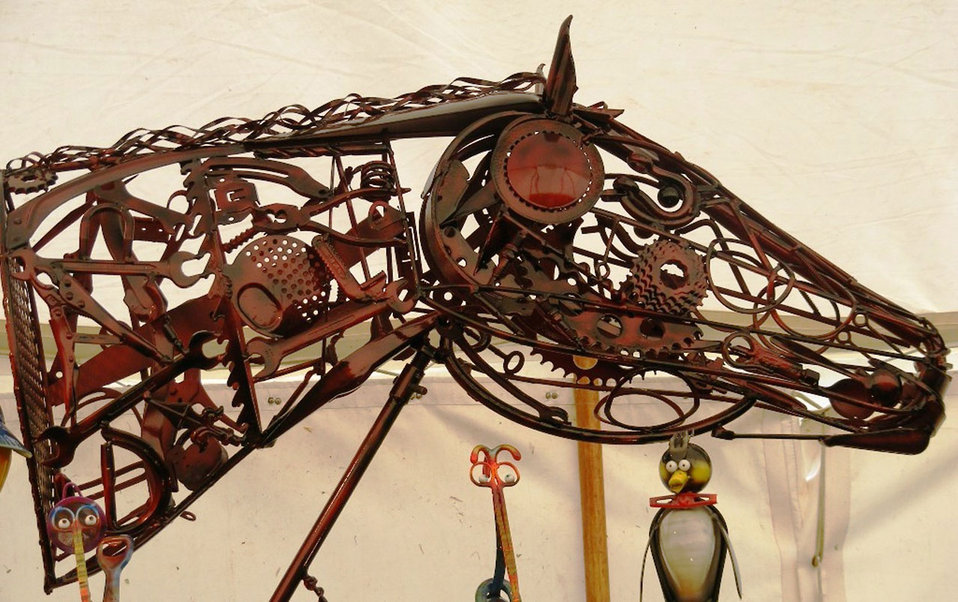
Horse head

An example of the art of metalwork.